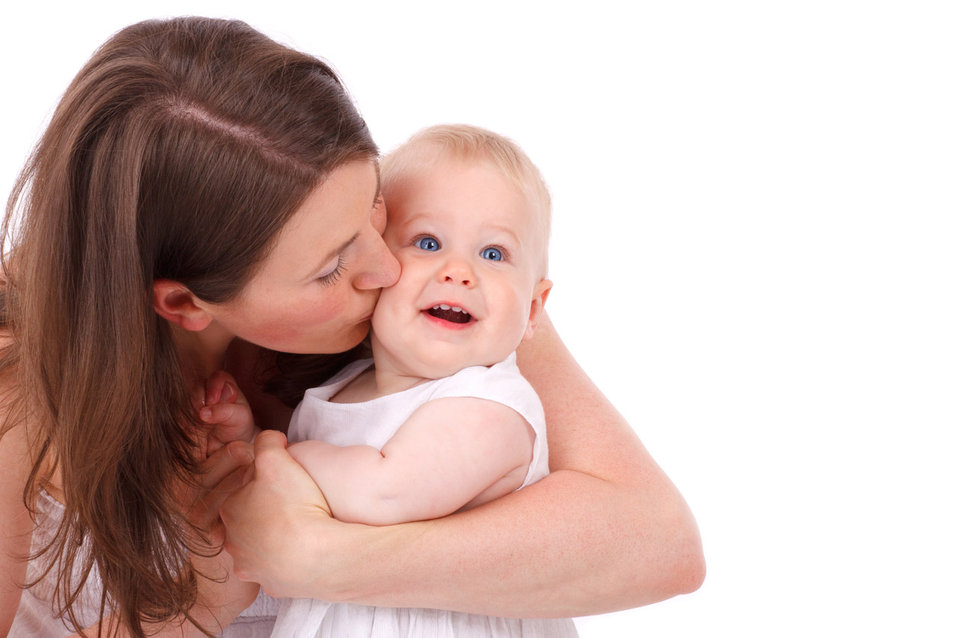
Mother kissing baby

Mother kissing her baby daughter isolated on white background.